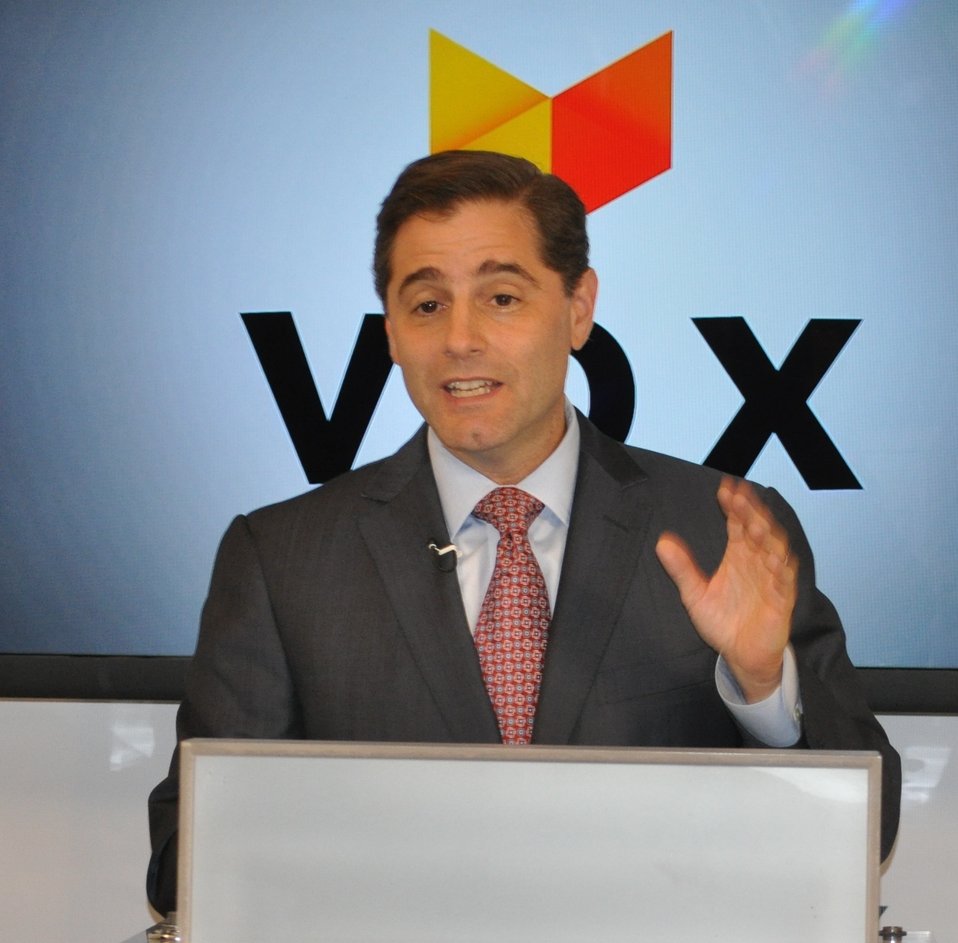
Broadband Challenges and Opportunities, at Vox Media